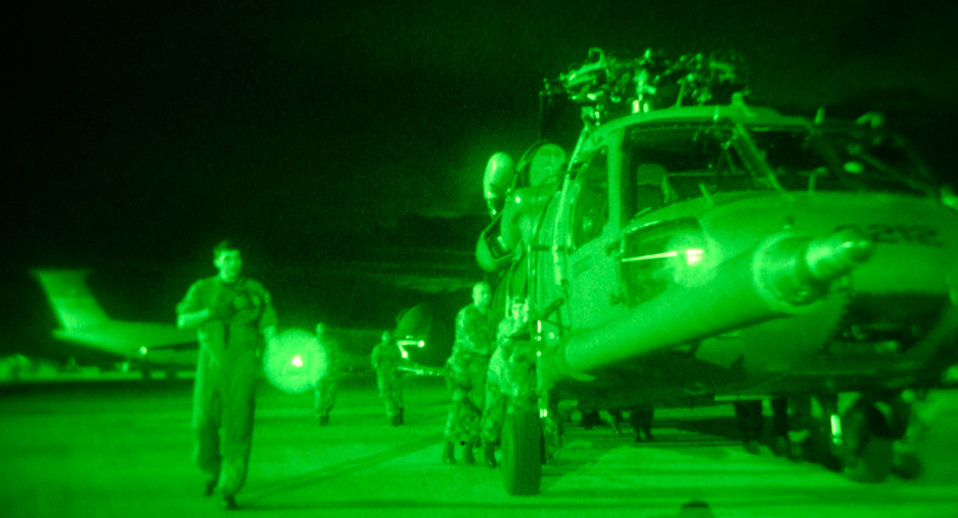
Low-light operation

LUNGI, Sierra Leone -- Airmen from the 85th Maintenance Squadron and 56th Rescue Squadron, Naval Air Station Keflavik, Iceland move a HH-60G Pave Hawk upon arrival here. European Command is currently in Sierra Leone to provide personnel recovery and emergency evacuation capability for the Humanitarian Assistance Survey team already in Liberia.